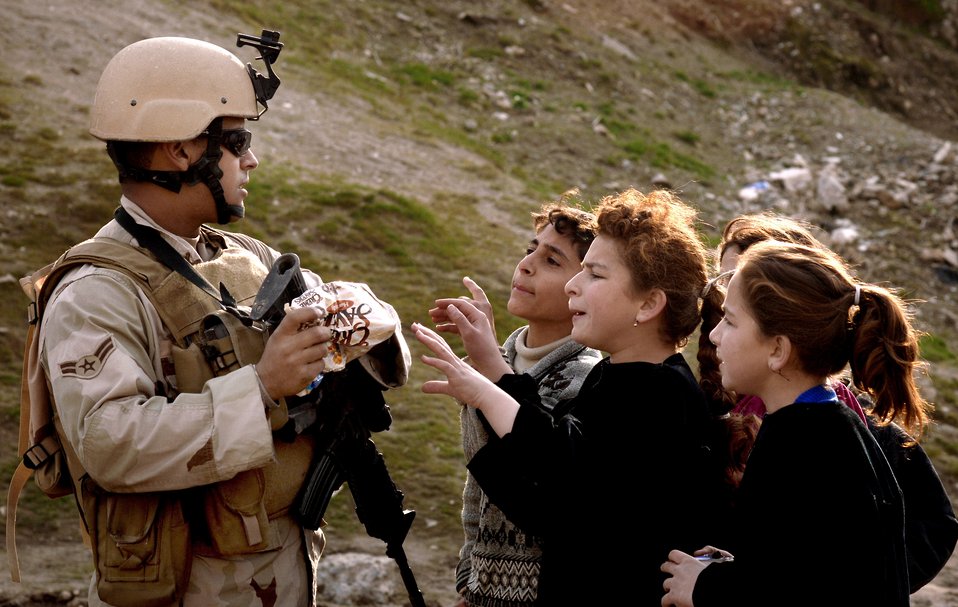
Sweet tooths

TALL AFAR, Iraq -- Airman 1st Class Angel Montes gives candy to local children while on patrol Feb. 1.